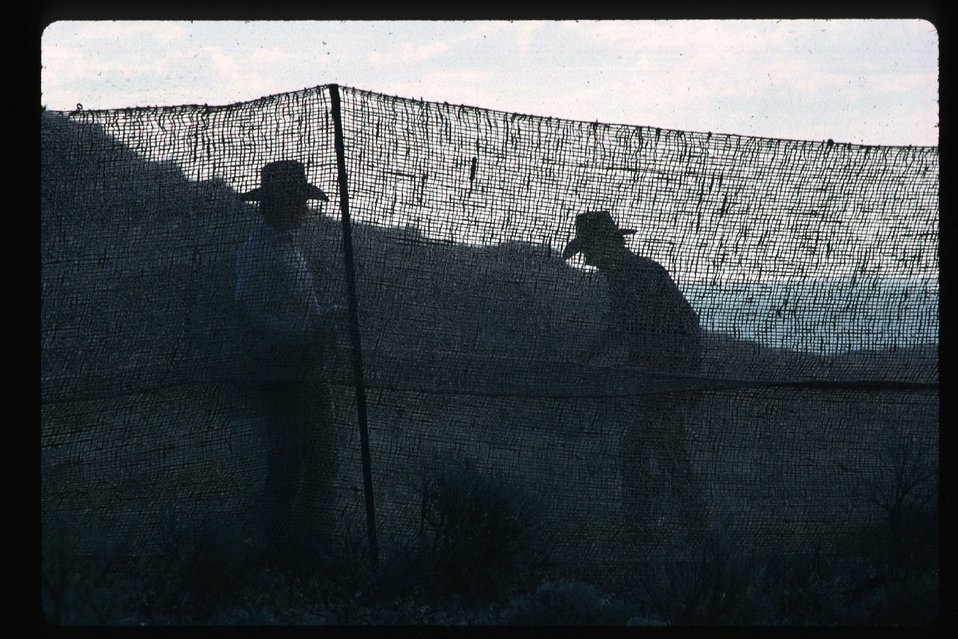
Wild Horse and Burro roundup Vale District Oregon LSRD Lower Snake River District